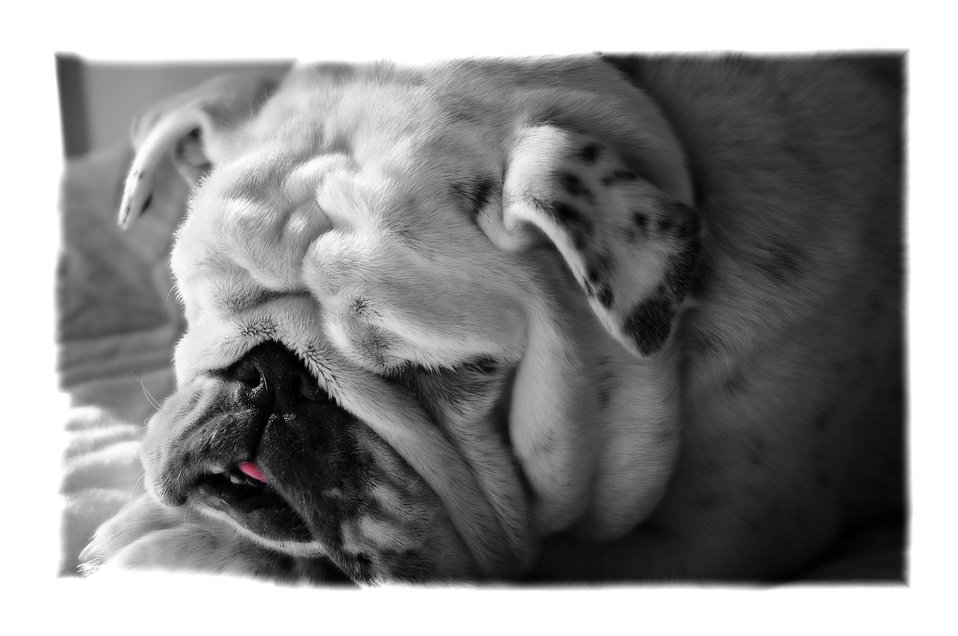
Mia

White bulldog.